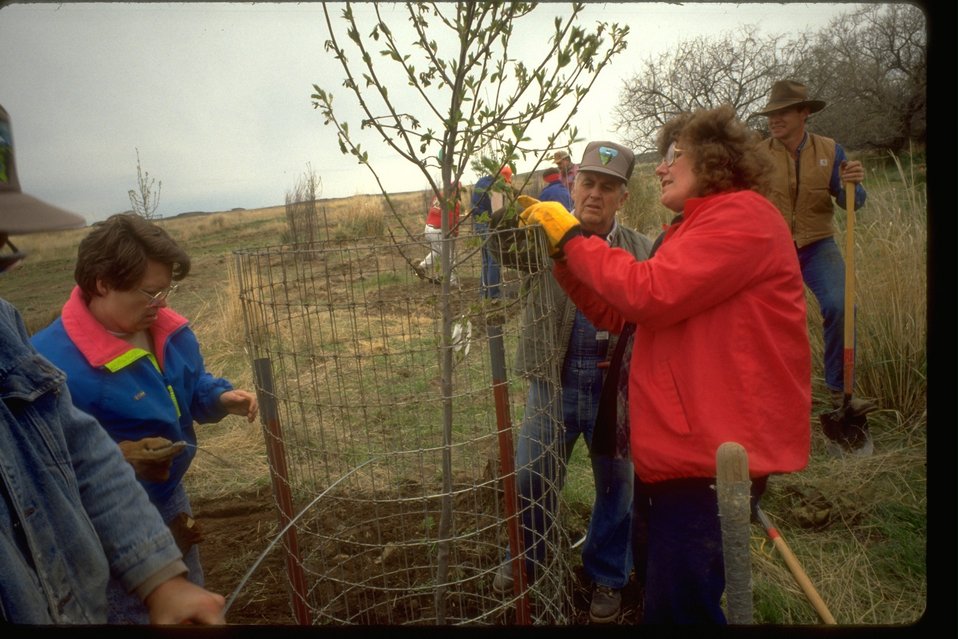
Working with Inland Northwest Wildlife Council to plant trees at Lakeview Ranch, Lincoln County, Washington.